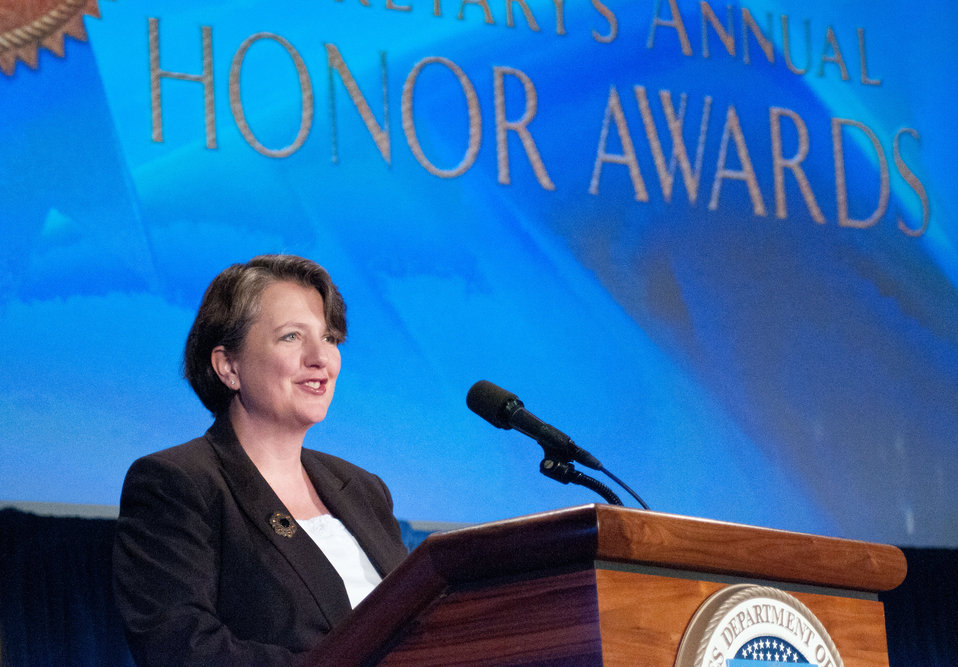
Deputy Secretary of Agriculture Kathleen Merrigan provided opening remarks and introduction of Agriculture Secretary Tom Vilsack, during the United States Department of Agriculture 63rd Secretary’s Annual Honor Awards held in the Jefferson Auditorium in Washington, D.C. on Wednesday, September 14, 2011.